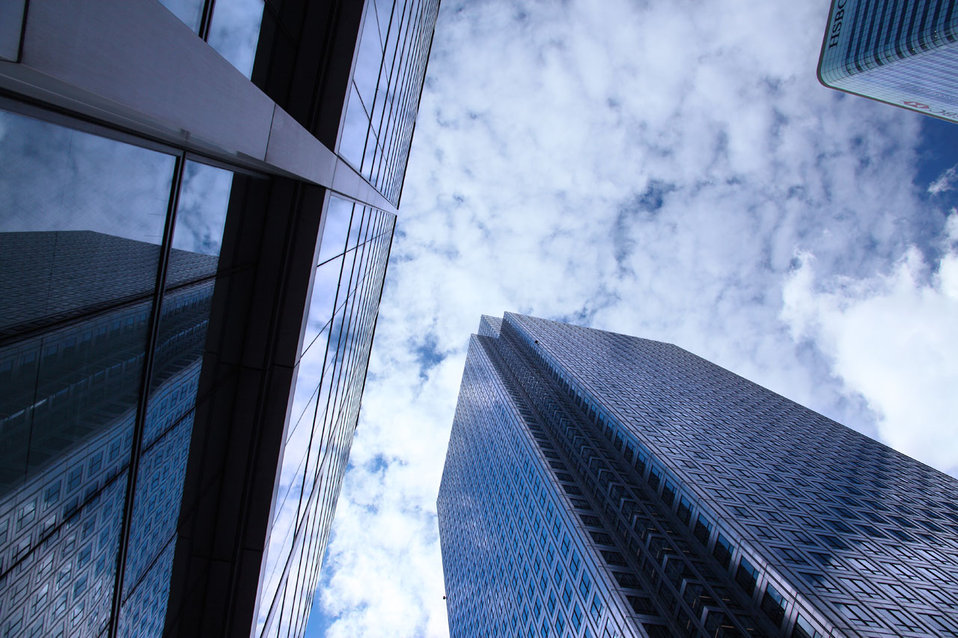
Glass skyscrapers

Blue glass skyscrapers in london.